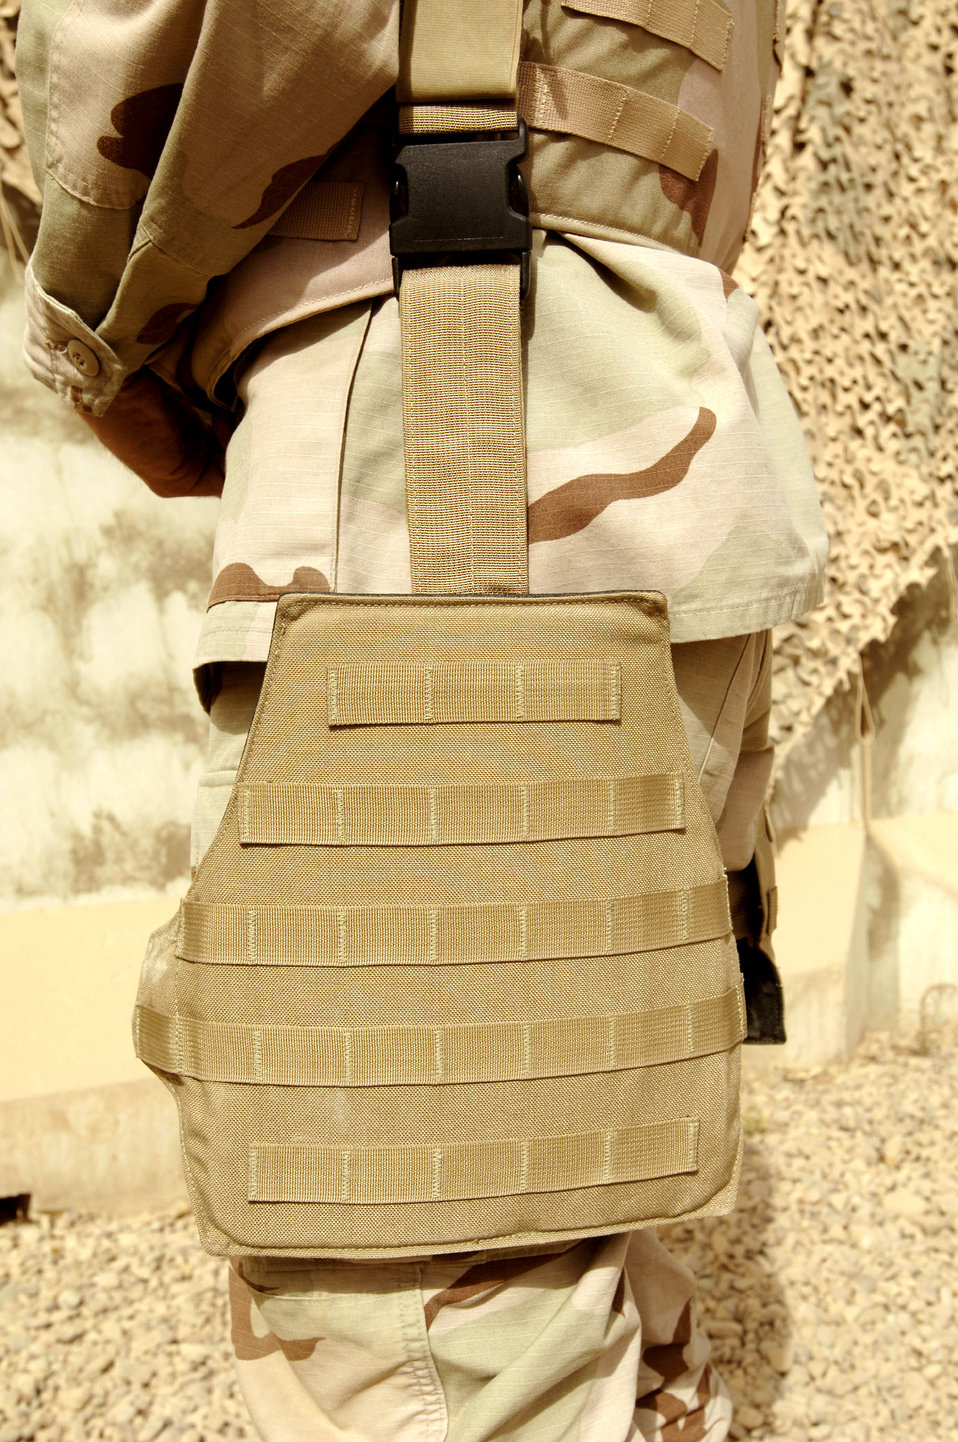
Airman tests new body armor

BALAD AIR BASE, Iraq -- Tech. Sgt. Gerald Lowry displays the leg protector that is part of the new